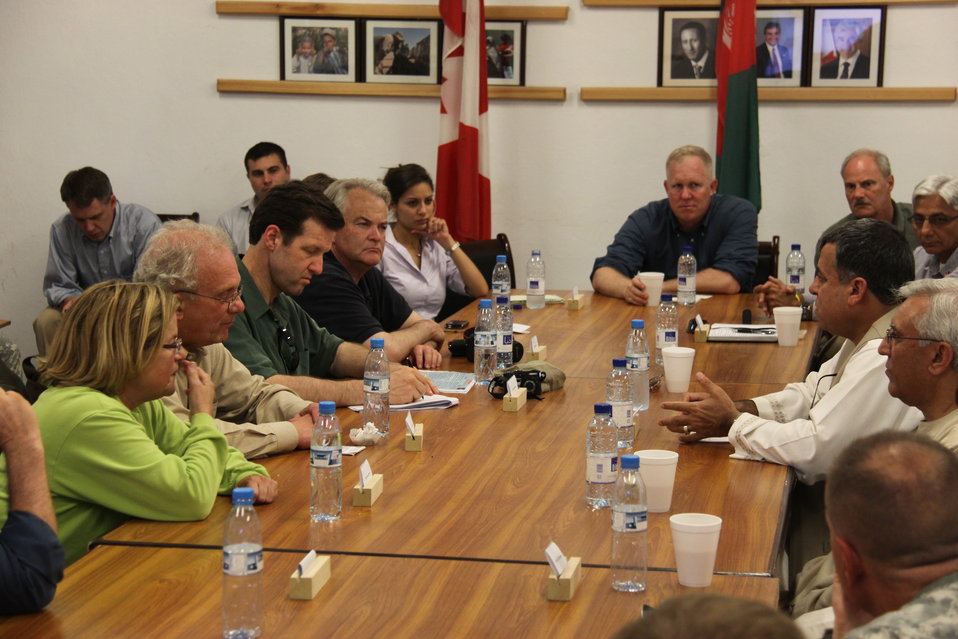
Meeting with Local Leaders in Kandahar